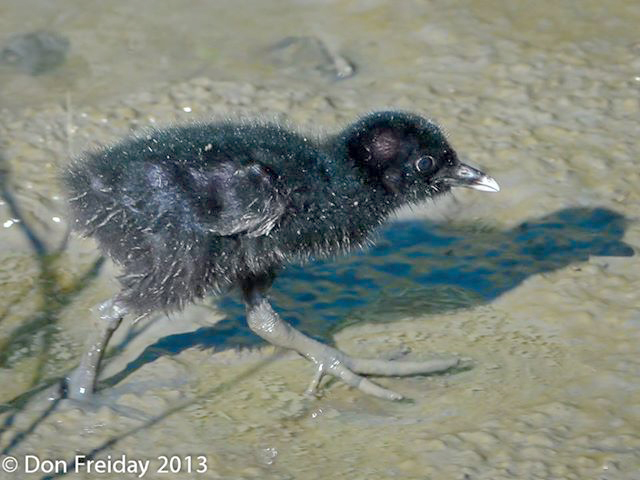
Photo of the Week - Clapper Rail Chick (NJ)

Photo of the Week - 7/8/13

The undisputed highlight of the Friday Bird Walk at the Edwin B. Forsythe National Wildlife Refuge was a family of 8 downy black Clapper Rail chicks and their attentive parents, seen from the Leed's Eco-trail Boardwalk!